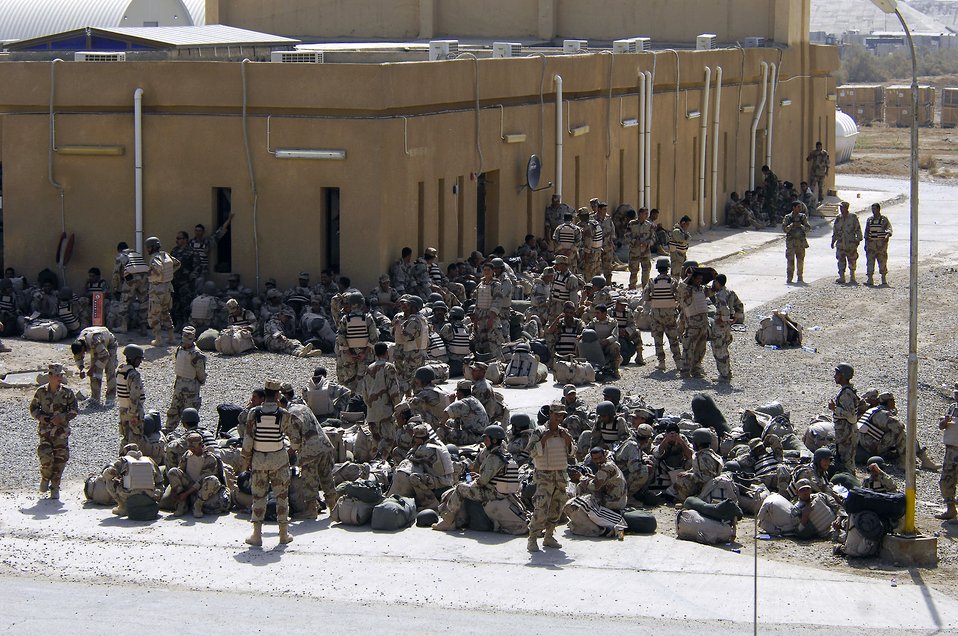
Iraqi air force in the fight

Members of the Iraqi army wait to board an Iraqi C-130 Hercules for a March 30 flight to Basra, Iraq, at New Al Muthana Air Base, Iraq. All processing, loading and transporting of the Iraqi troops is being conducted by the Iraqi air force.